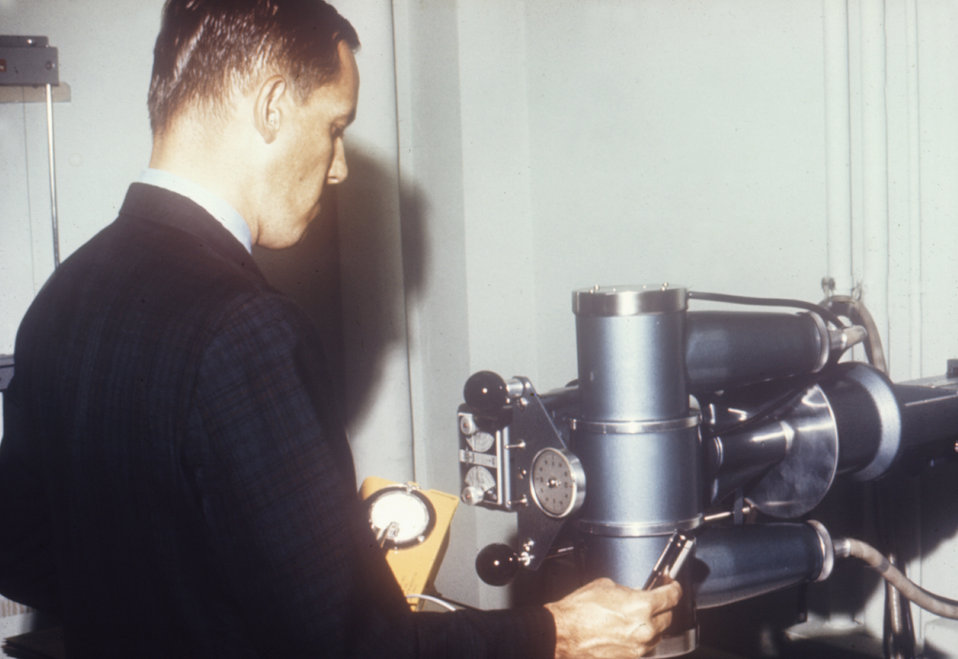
This 1970 photograph shows a radiologic health sanitarian with a Geiger counter surveying an x-ray machine in a clinic.